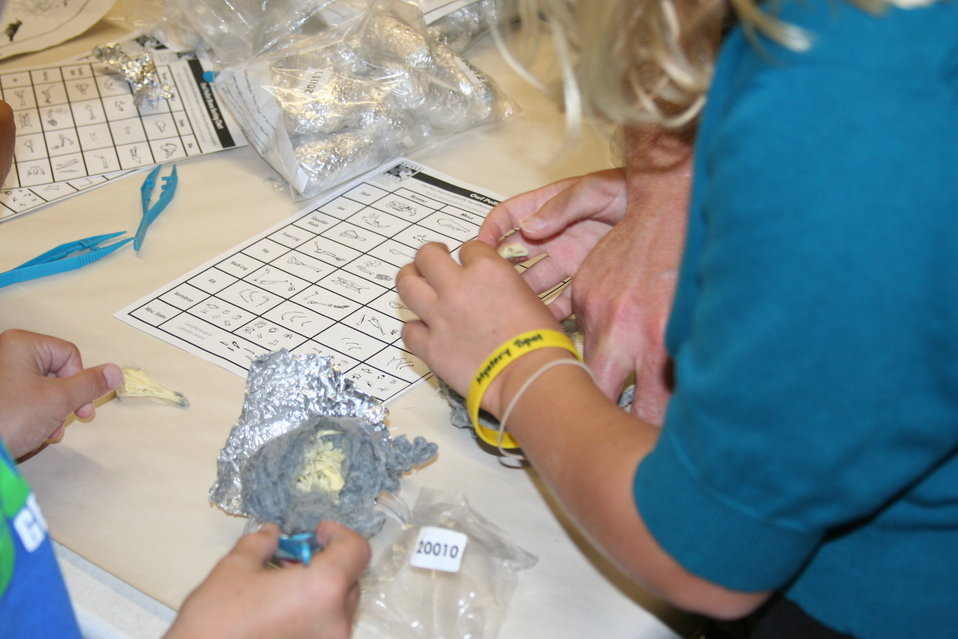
Creatures of the Night 2011